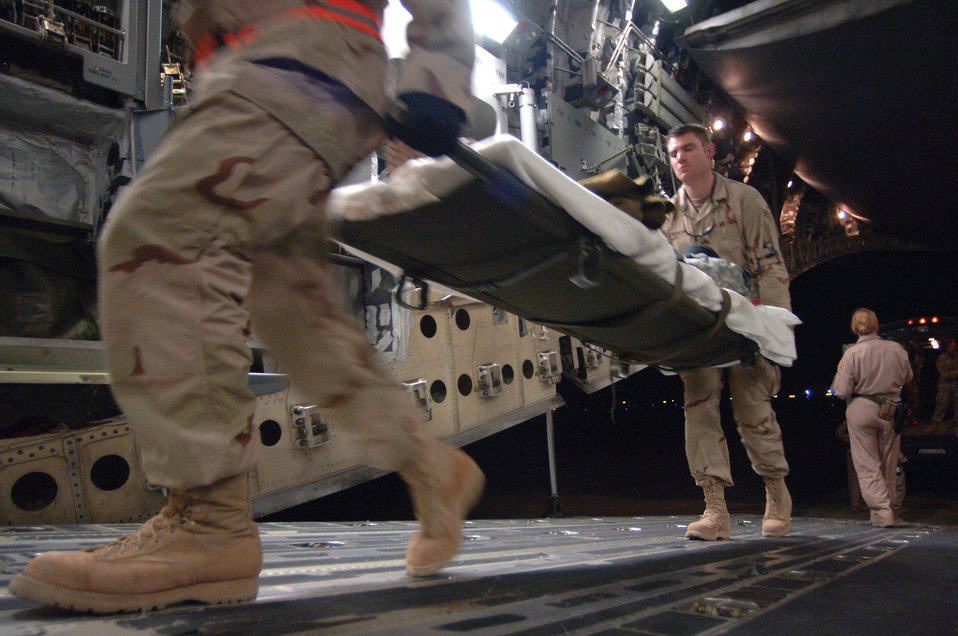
Staging facility prepares injured warfighters for flight

Tech. Sgt. Sean Devine and Senior Airman Ricardo Reveles help load injured Soldiers onto a medical evacuation C-17 Globemaster III Feb. 21 at Balad Air Base, Iraq, departing for Landstuhl, Germany, where they will receive further care for their wounds. Sergeant Devine and Airman Reveles are assigned to the 332nd Expeditionary Communications Squadron and volunteer at the Contingency Aeromedical Staging Facility.